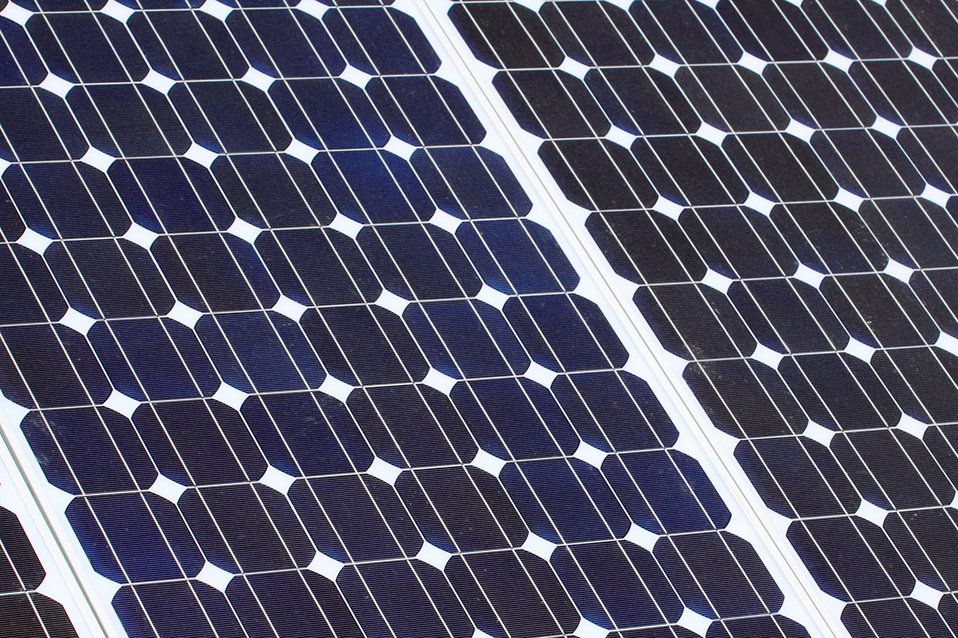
Solar panel

Solar photovoltaic panels.